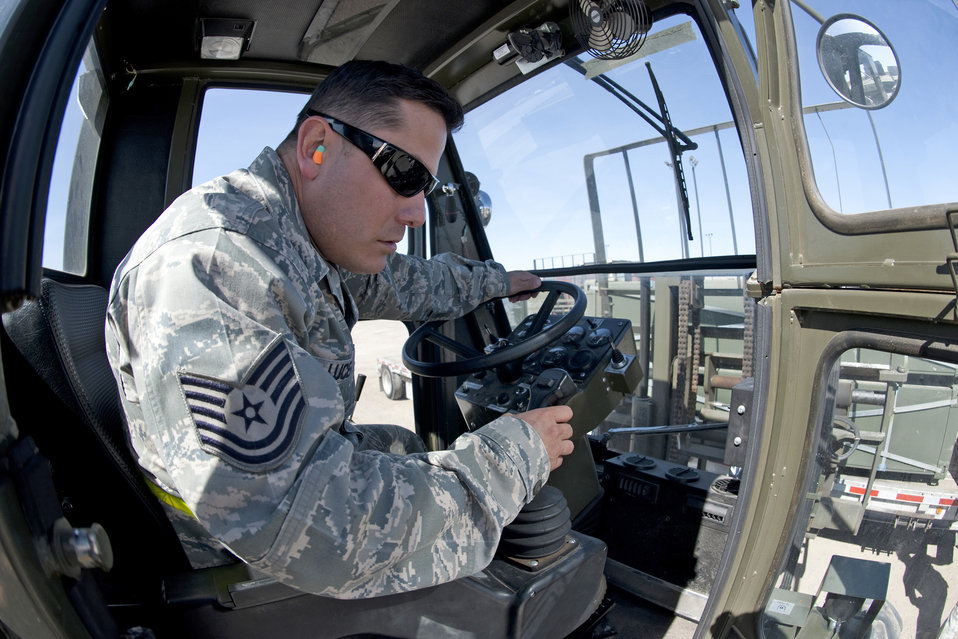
Airmen prepare BEAR base for troops in Afghanistan

Tech. Sgt. Raymond Lucero uses a 13,000-pound loader to load nearly 11,000 pounds of AM-2 matting onto a flatbed trailer Feb. 24, 2010, at Holloman Air Force Base, N.M. Sergeant Lucero is a team leader with the 49th Materiel Maintenance Support Squadron. The 49th MMSS staff is deploying 480,000 square feet of the matting that will be assembled to create airstrips supporting joint and coalition forces throughout Afghanistan.